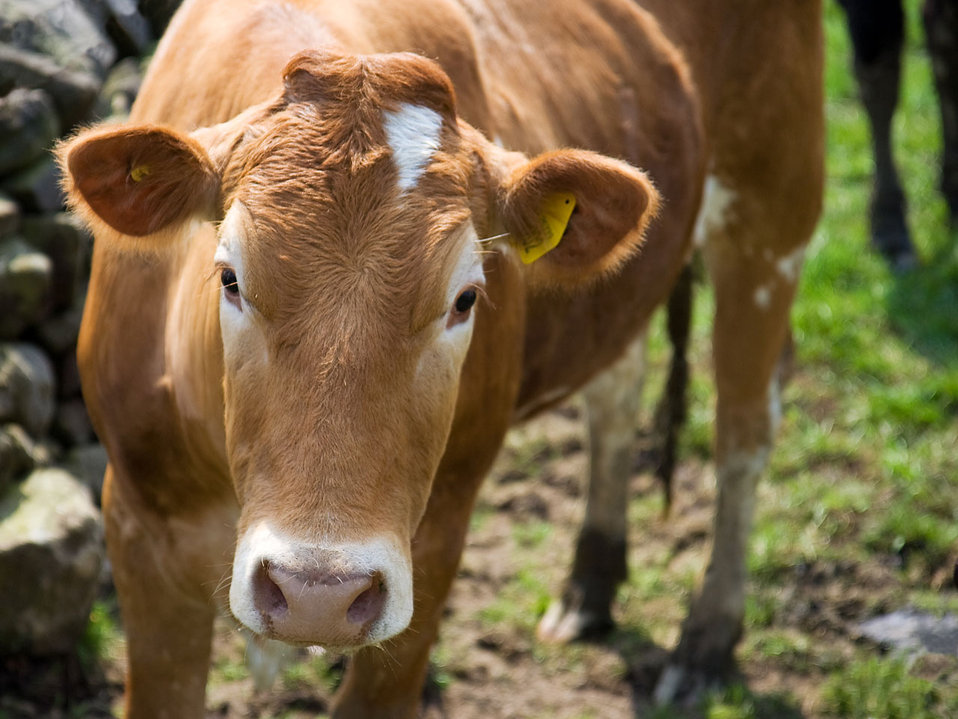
Young bull

A young brown bull.